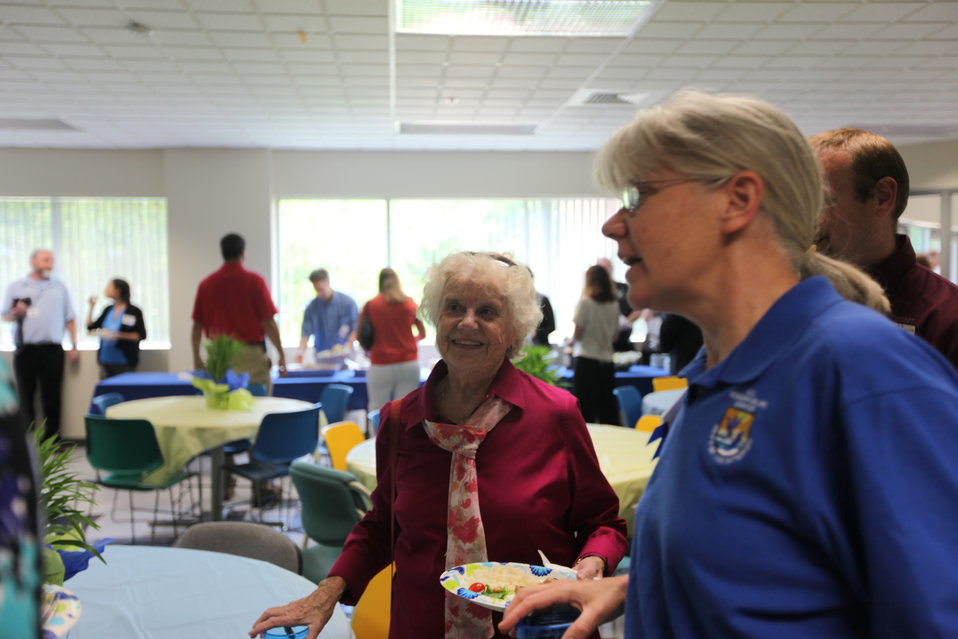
R5 Awards Ceremony